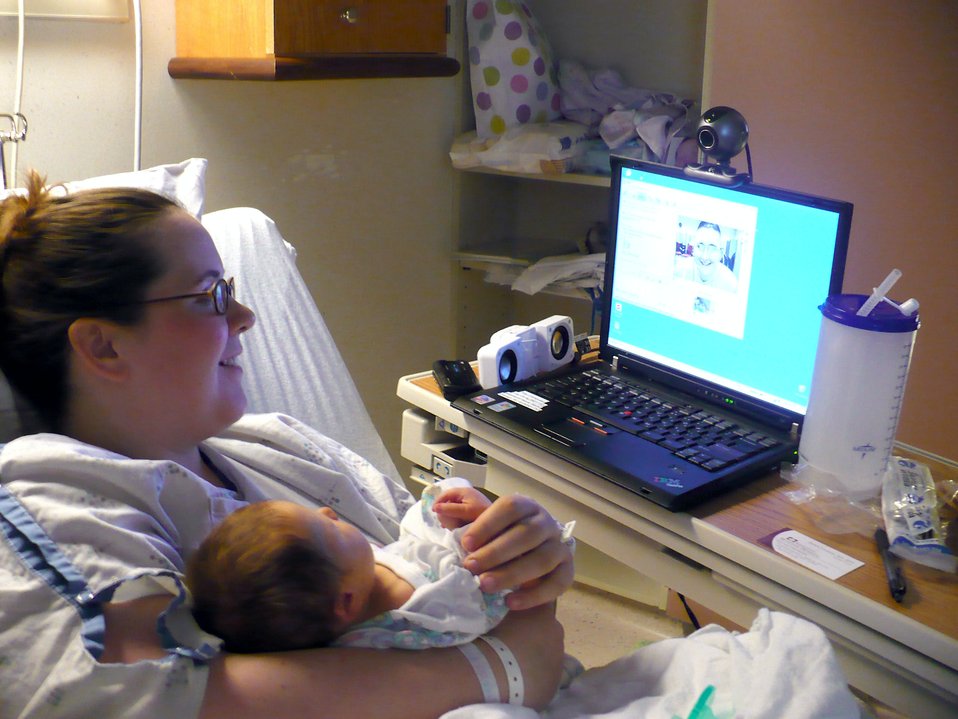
Deployed dad watches son's birth via Web cam

Jamie Todd talks to her husband, Staff Sgt. Nicholas Todd, via Web cam just after their son, Rylan, was born March 25 at a hospital near Ellsworth Air Force Base, S.D. Sergeant Todd is deployed to a Southwest Asian air base from Ellsworth Air Force Base, S.D.